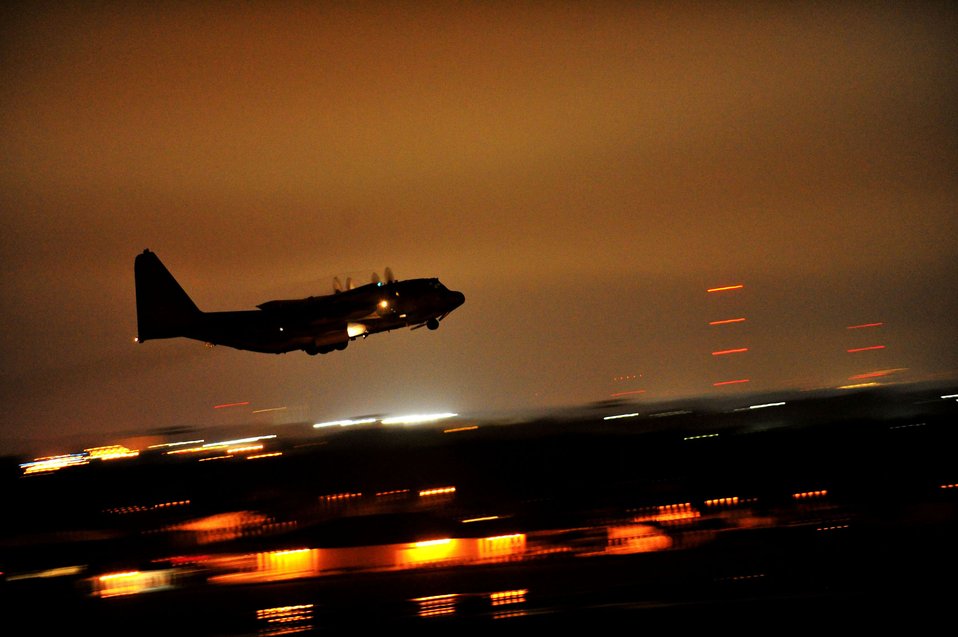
Spooky flight

An AC-130U Spooky gunship takes off January 31, 2011, from Hurlburt Field, Fla.